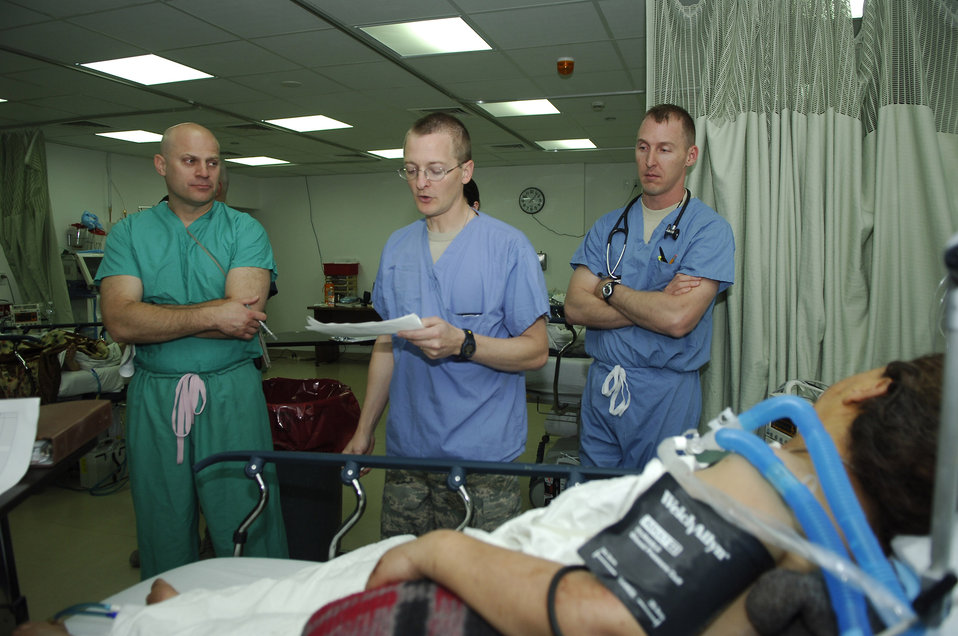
Balad trauma doctors gather to hone skills

Maj. (Dr.) Eric Barnes briefs doctors during rounds on the condition of an Iraqi woman March 27 at Balad Air Base, Iraq. The trauma doctors performed rounds with the hospital staff after the Joint Theater Trauma System conference in order to observe how the Air Force Theater Hospital works. Major Barnes is assigned to the 332nd Expeditionary Medical Operations Squadron intensive care unit deployed from Lackland Air Force Base, Texas.